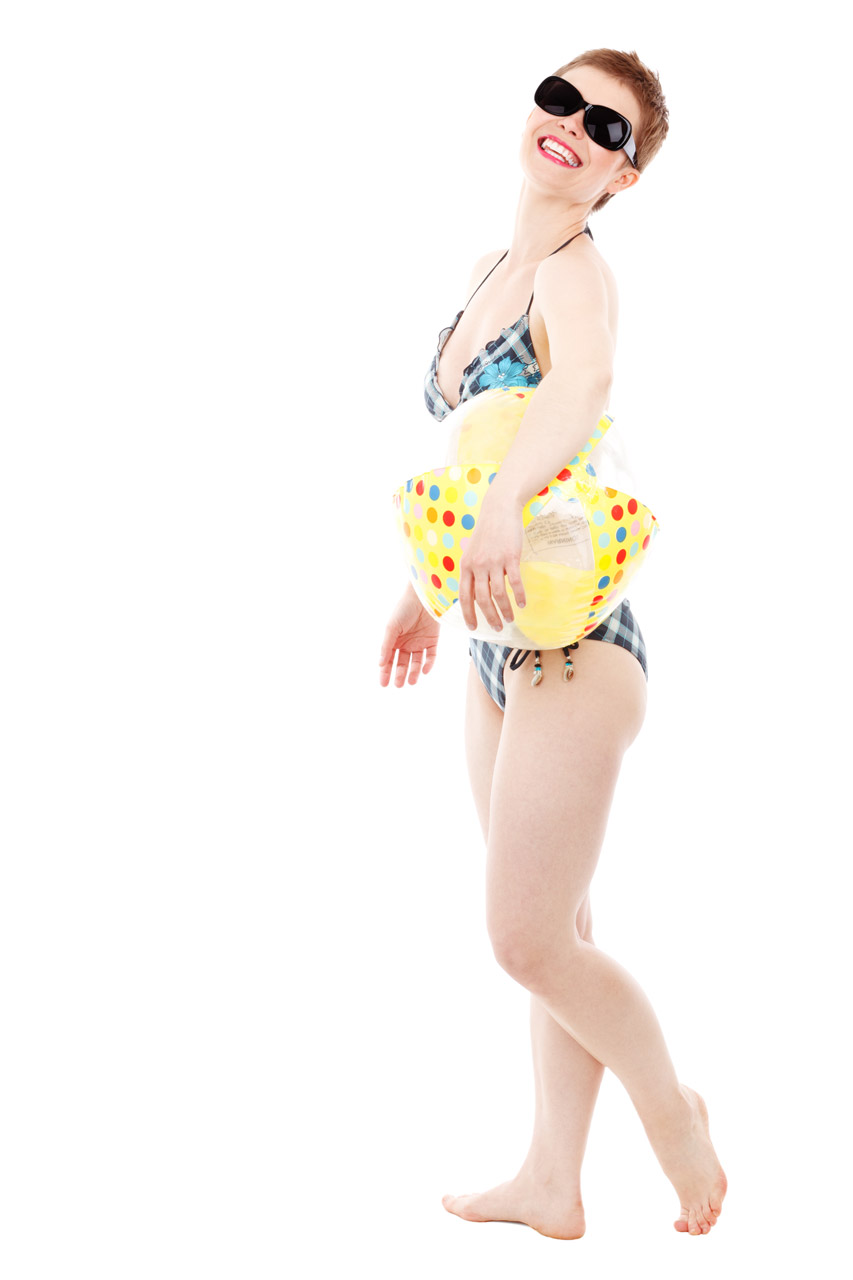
Ready for beach

Young woman is ready to hit the beach - isolated on white background.